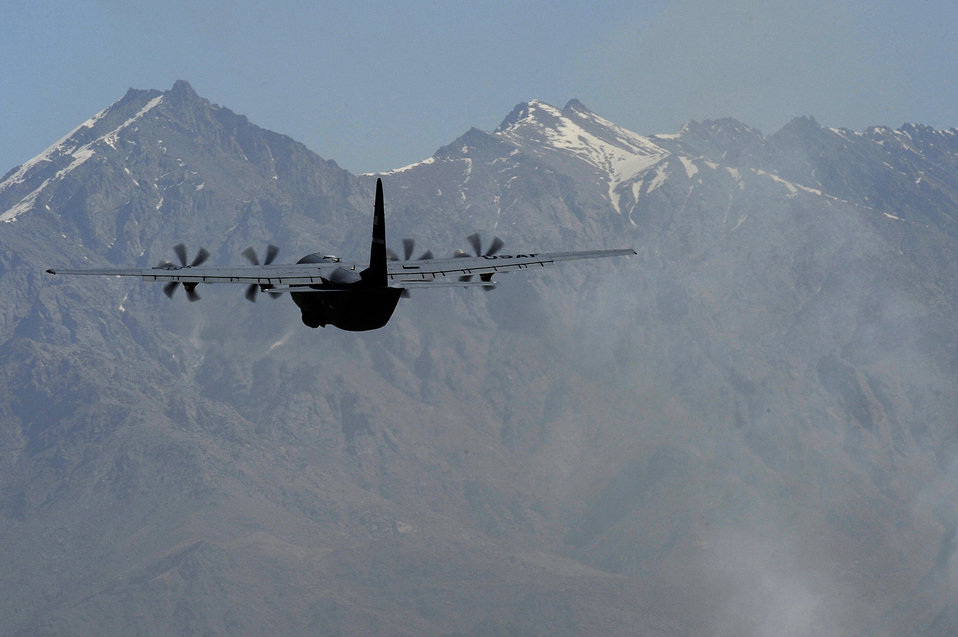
Bagram Airmen provide support

A C-130 Hercules takes flight April 6, 2010 at Bagram Airfield, Afghanistan. The 455th Air Expeditionary Wing provides expeditionary combat and combat support to U.S. and coalition forces.